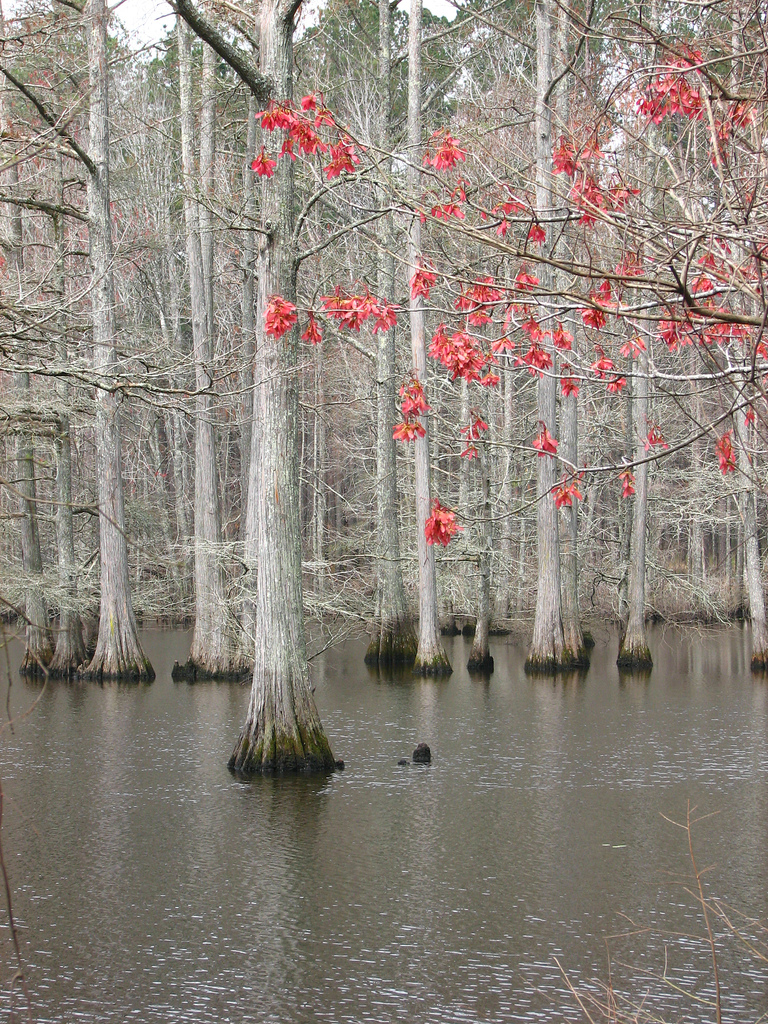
red maple

Noxubee National Wildlife Refuge, MS